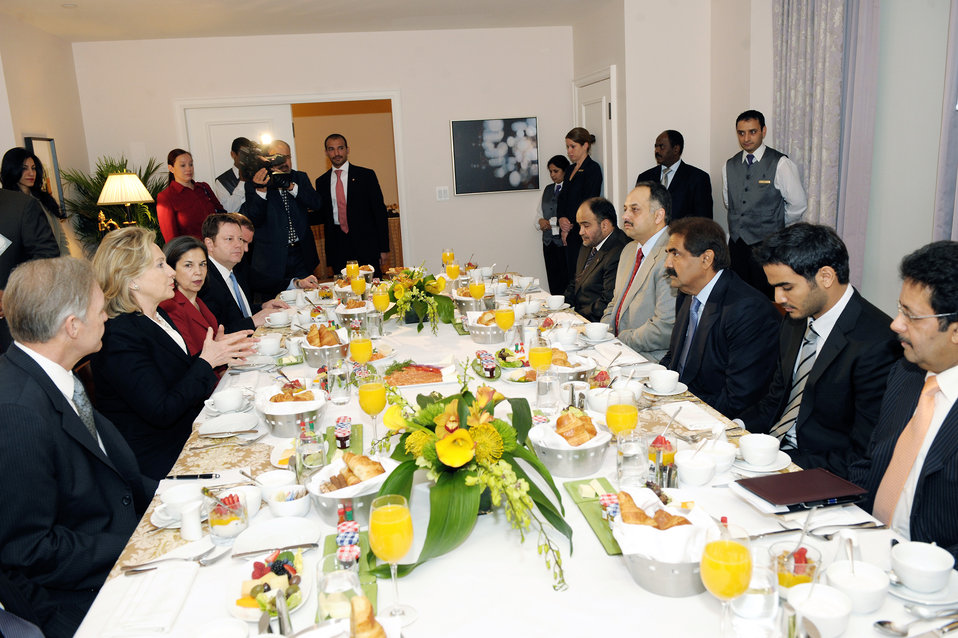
Secretary Clinton Meets With Qatari Amir Sheikh Hamad bin Khalifa al-Thani

U.S. Secretary of State Hillary Rodham Clinton meets with Qatari Amir Sheikh Hamad bin Khalifa al-Thani in Washington, D.C., on April 12, 2011.